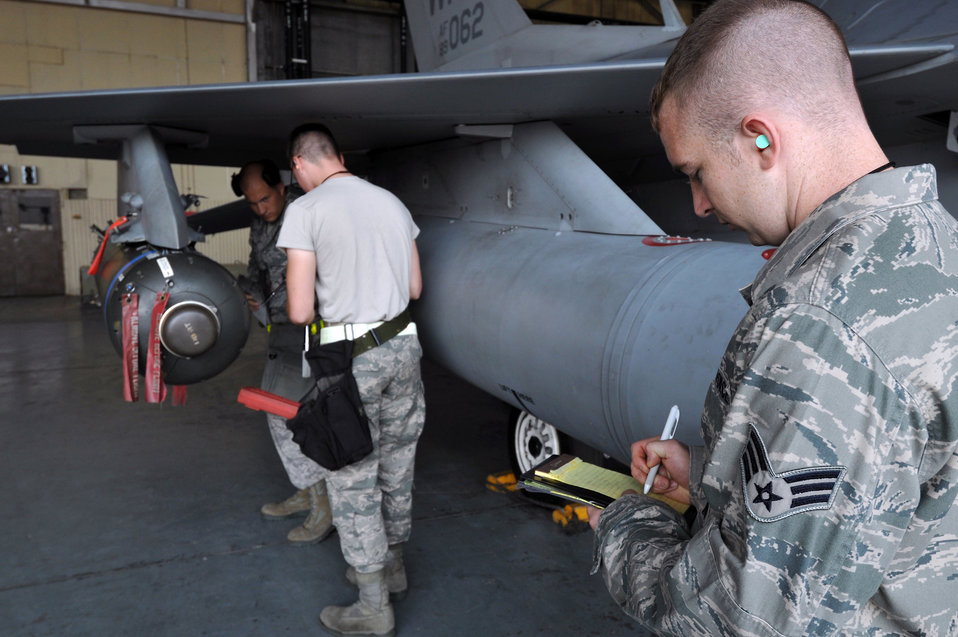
Load crew evaluation

Senior Airman Ryan Castle evaluates a load crew June 28, 2011, at Kunsan Air Base, South Korea. Airman Castle is a load crew evaluator assigned to the 8th Maintenance Operations Squadron.